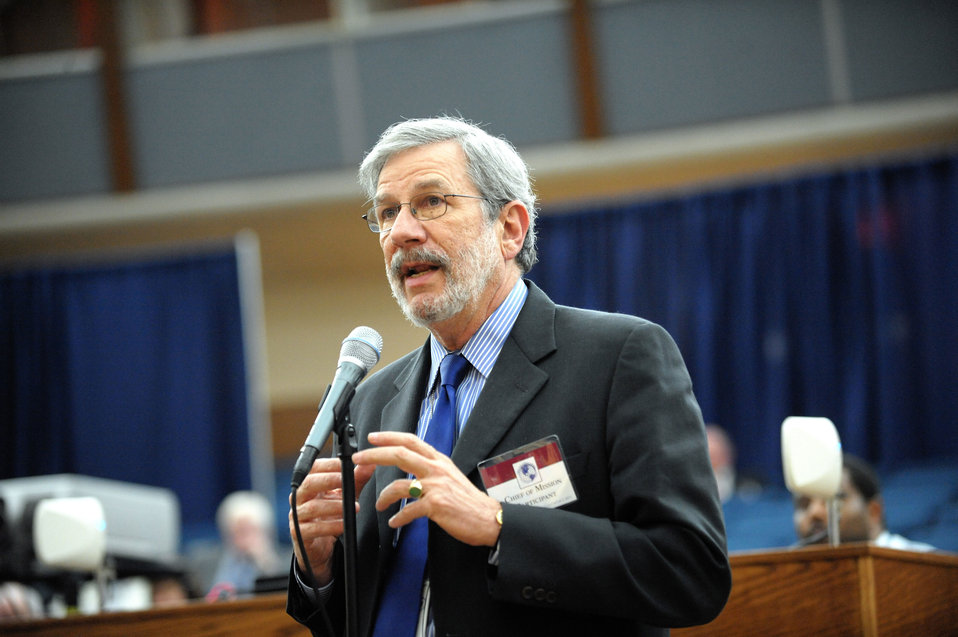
An Ambassador poses a question at the Town Hall during the 2011 Global Chiefs of Mission Conference at the U.S. Department of State in Washington, D.C., on February 3, 2011.